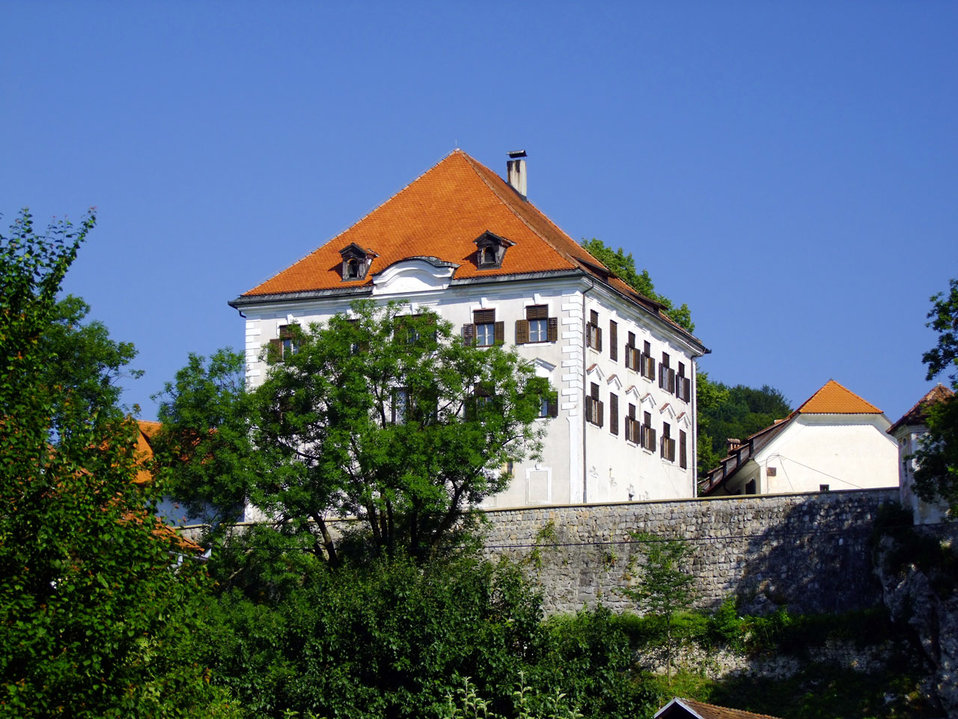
Zaprice castle

The third castle in kamnik.